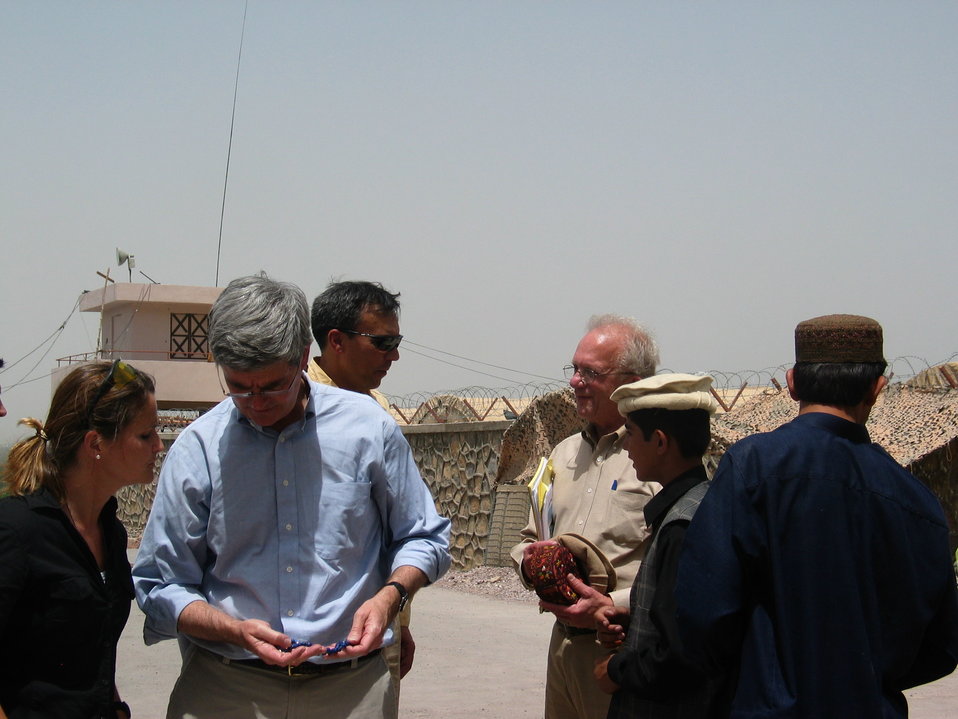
CODEL Berman